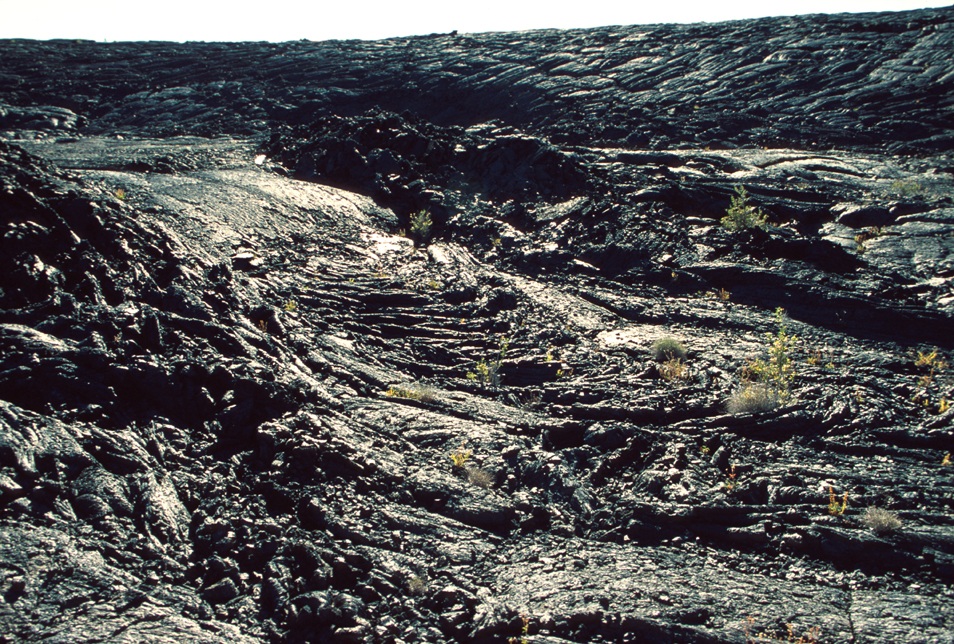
Craters of the Moon National Monument Shoshone Field Office USRD Upper Snake River District